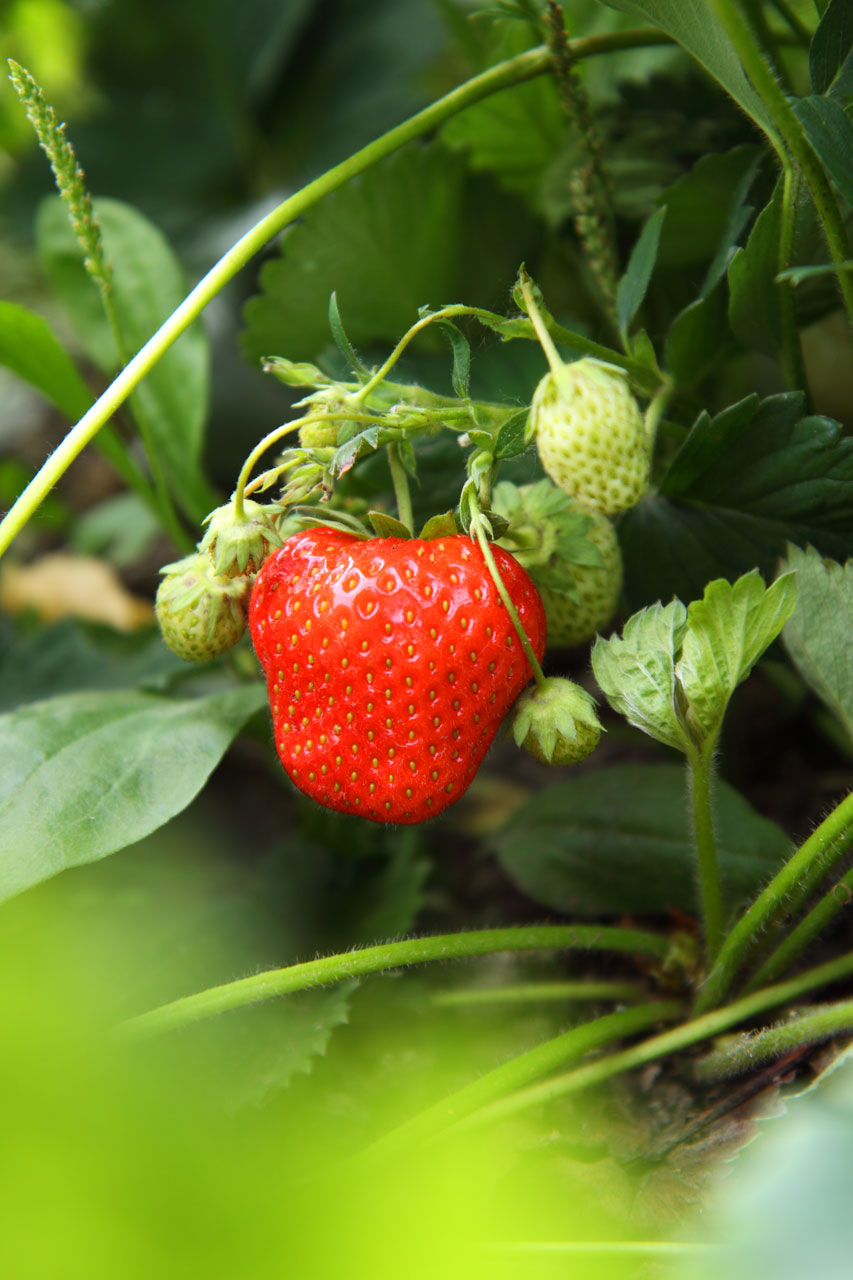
Red strawberry

Single red strawberry still growing.